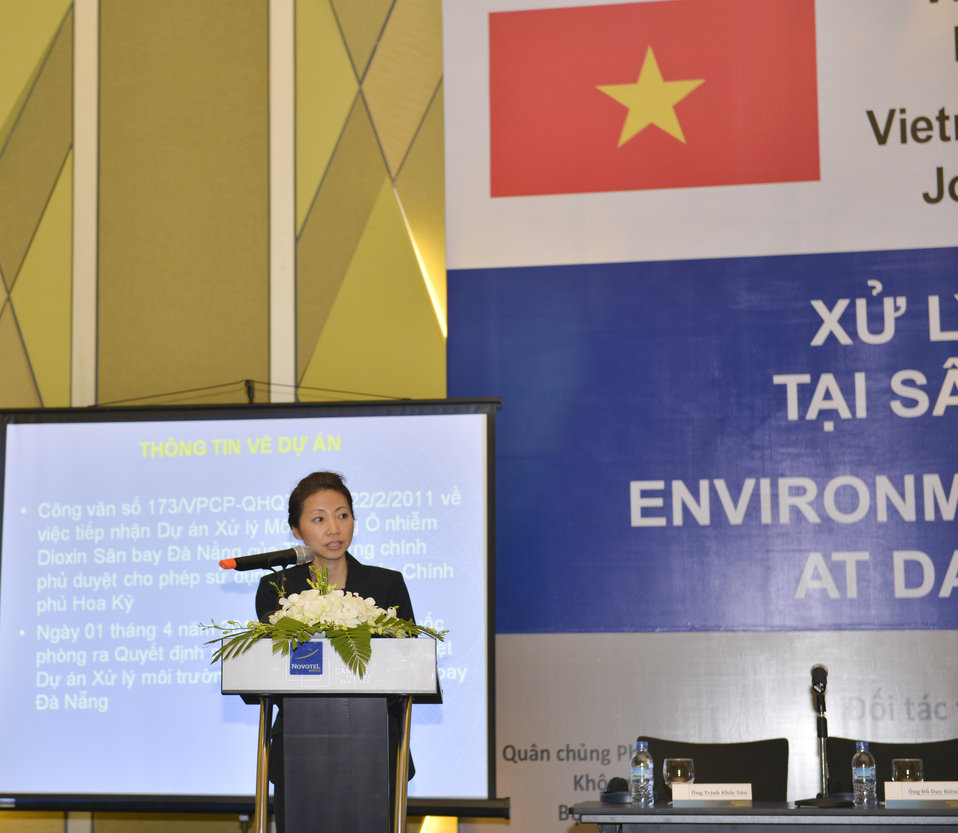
Ms. Kyung (KC) Choe, USAID’s Environment and Social Development Office Director, speaks at the the Community Outreach Session on Environmental Remediation of Dioxin Contamination at Danang Airport Project.

Danang, March 25, 2014.